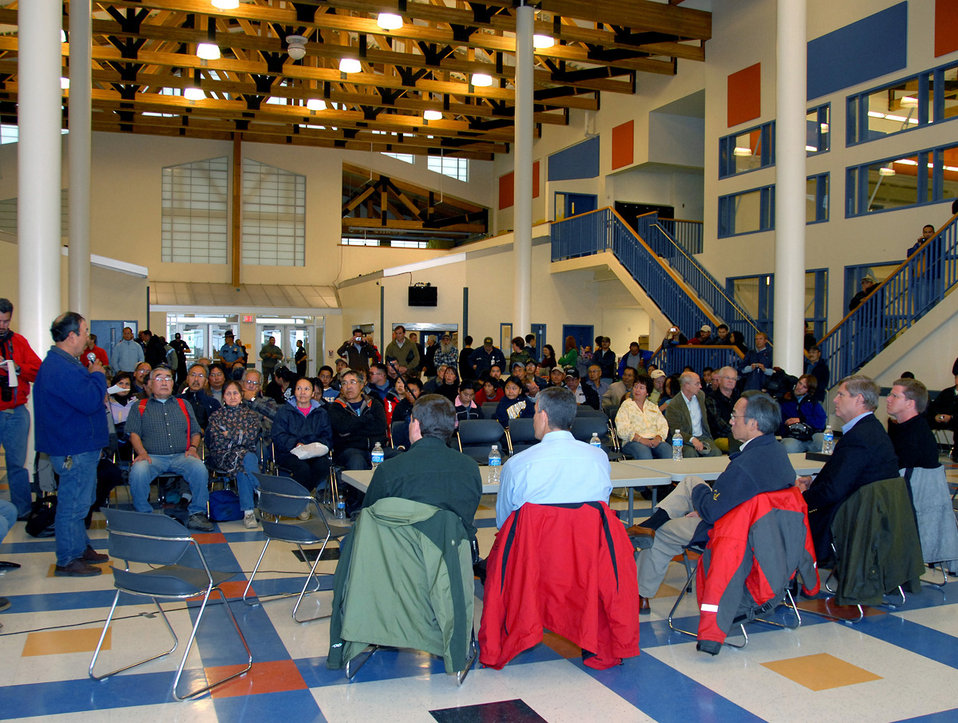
Rural Tour 0287 copy

Rural Tour Alaska Aug 2009